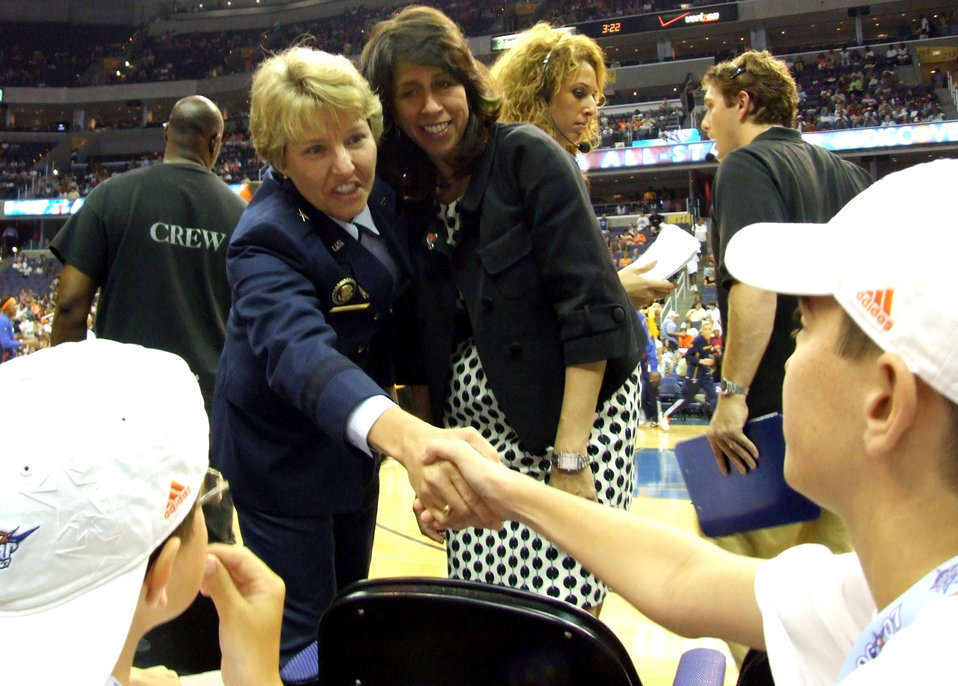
Women's basketball salutes troops, families

WNBA President Donna Orender (right) and Brig. Gen. Michelle D. Johnson, the director of Air Force Public Affairs, greet people at the Women's National Basketball Association's annual All-Star Game held July 15 at the Verizon Center in Washington, D.C.